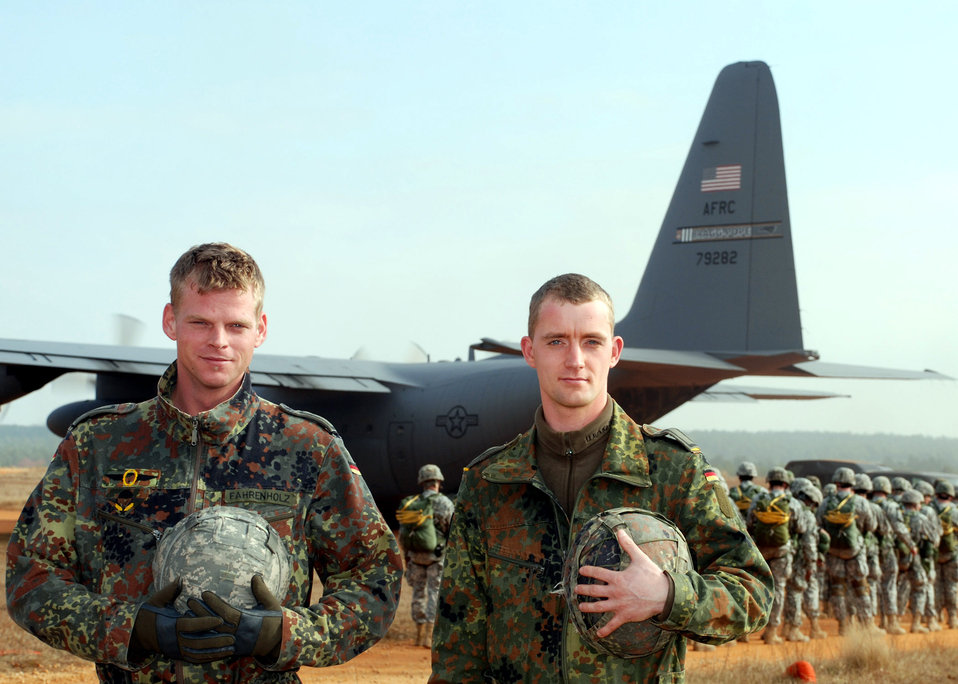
Operation Toy Drop brings international, U.S. military together

German jumpmasters Sgts.Tom Fahrenholz and Christian Rhode pause for a moment as U.S. paratroopers board an Air Force Reserve Command C-130 Hercules during Operation Toy Drop Dec. 8 at the Sicily Drop Zone at Fort Bragg, N.C. The exercise included jumpmasters from Canada, Chile and Ireland, as well as Germany.